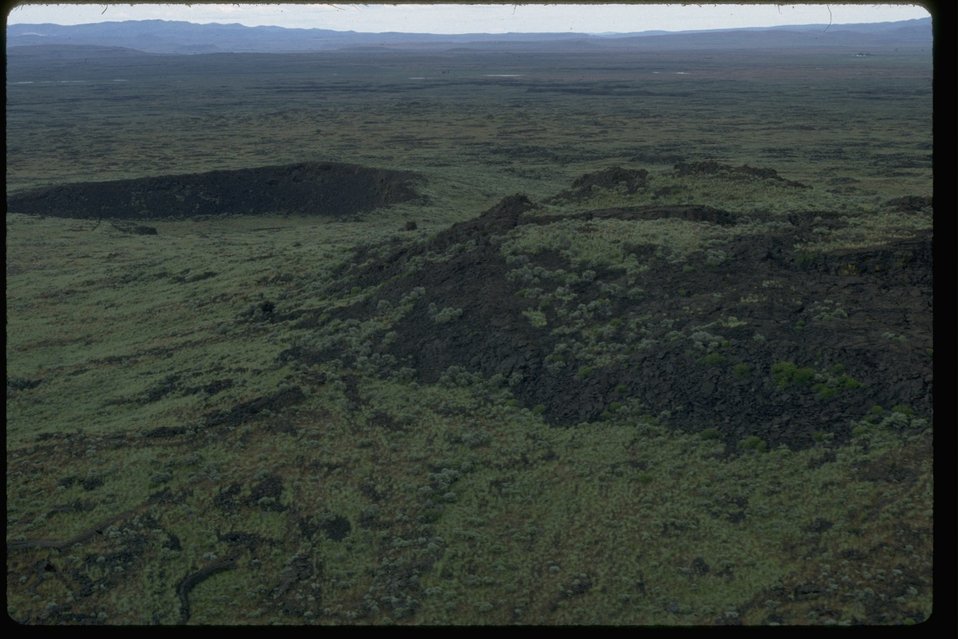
Lava Butte aerial photo.